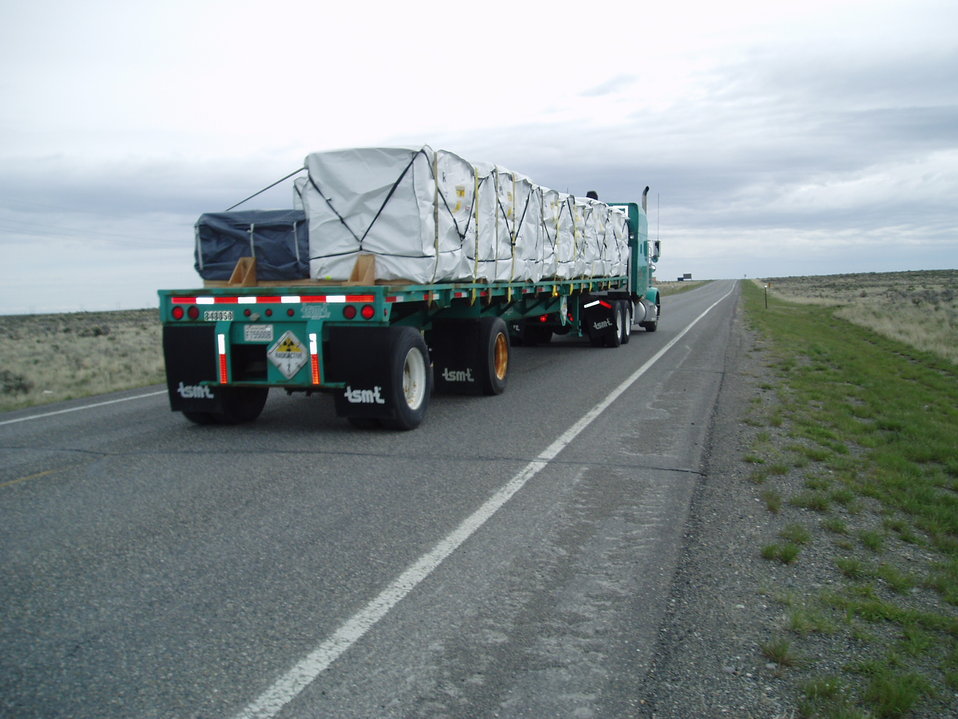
Idaho’s Advanced Mixed Waste Treatment Project Workers Complete Recovery Act Project

A shipment of transuranic radioactive waste leaves
DOE’s Idaho site en route to the Waste Isolation Pilot
Plant for permanent disposal.

In the expedited waste removal funded by more than $22 million from the Recovery Act, the workers safely retrieved, treated, and shipped close to 4,800 cubic meters of radioactive waste — which would fill two Olympic swimming pools — from the Cold War legacy to permanent disposal facilities.